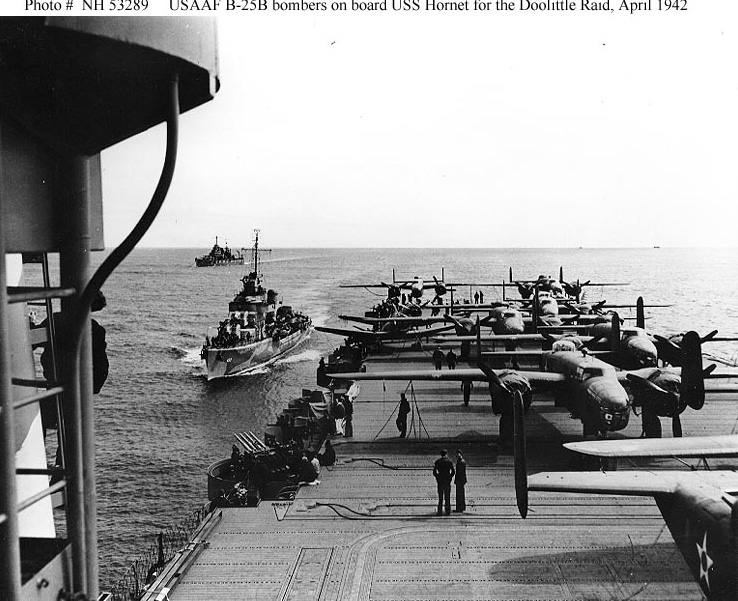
Doolittle's Raid

View looking aft from the island of USS Hornet (CV-8), while en route to the mission's launching point. USS Gwin (DD-433) is coming alongside, as USS Nashville (CL-43) steams in the distance. Eight of the mission's 16 B-25B bombers are parked within view, as are two of the ship's scout bombers. Note arresting gear and flight deck barriers in the lower portion of the photo, and 1.1